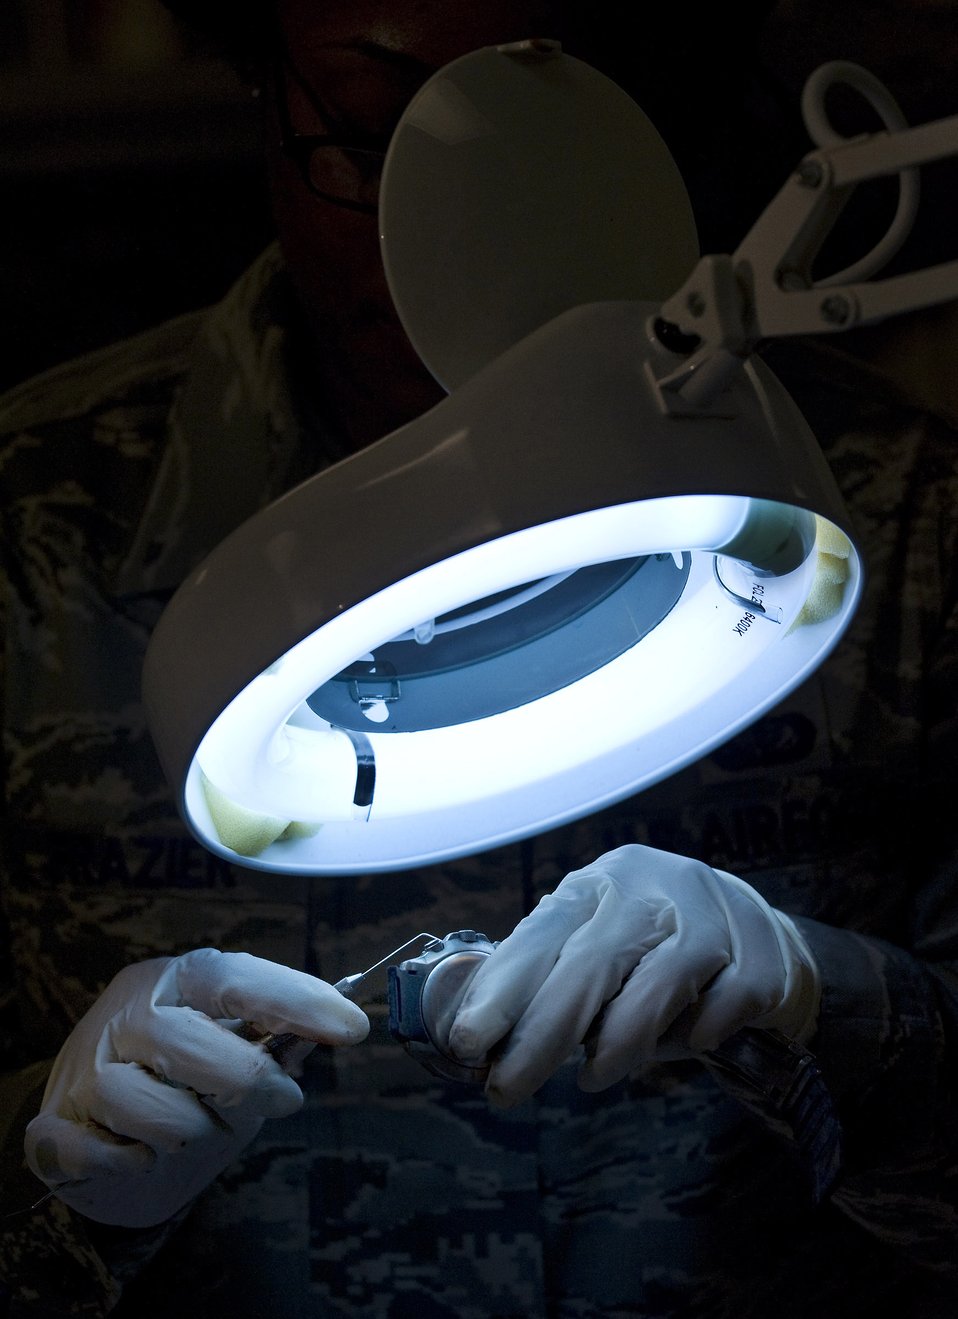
Dignified Transfer

Tech. Sgt. Latersa Frazier, a personal effects supervisor in the Air Force Mortuary Affairs Operations Center at Dover Air Force Base, Del., polishes a watch April 1 to demonstrate the cleaning process used on personal effects during preparation of remains, part of the dignified transfer process. The personal effects office prepares and cleans all items to be returned to the families of fallen heroes. Sergeant Frazier is deployed from the 43rd Force Support Squadron at Pope Air Force Base, N.C.